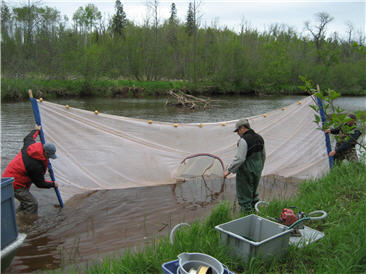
Wetlands study

EPA scientists use a beach seine to sample fish in the Great Lakes coastal wetlands.

Learn more about the Great Lakes coastal wetlands